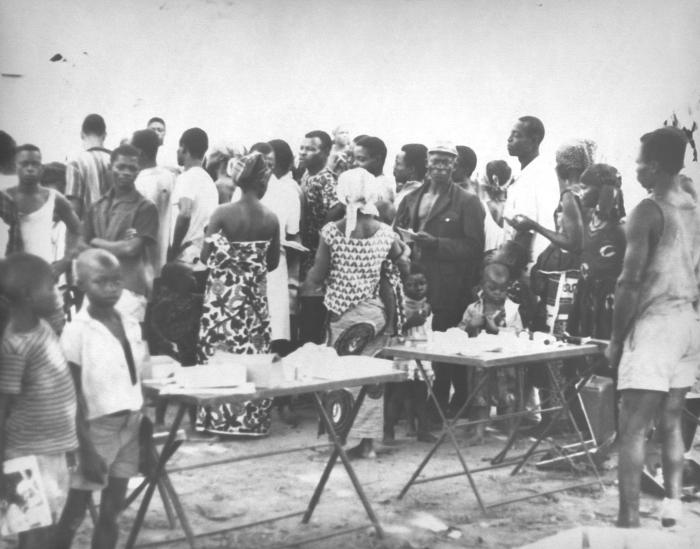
These people receiving smallpox vaccinations were participants in Nigeria's 1968 Smallpox Eradication Program.